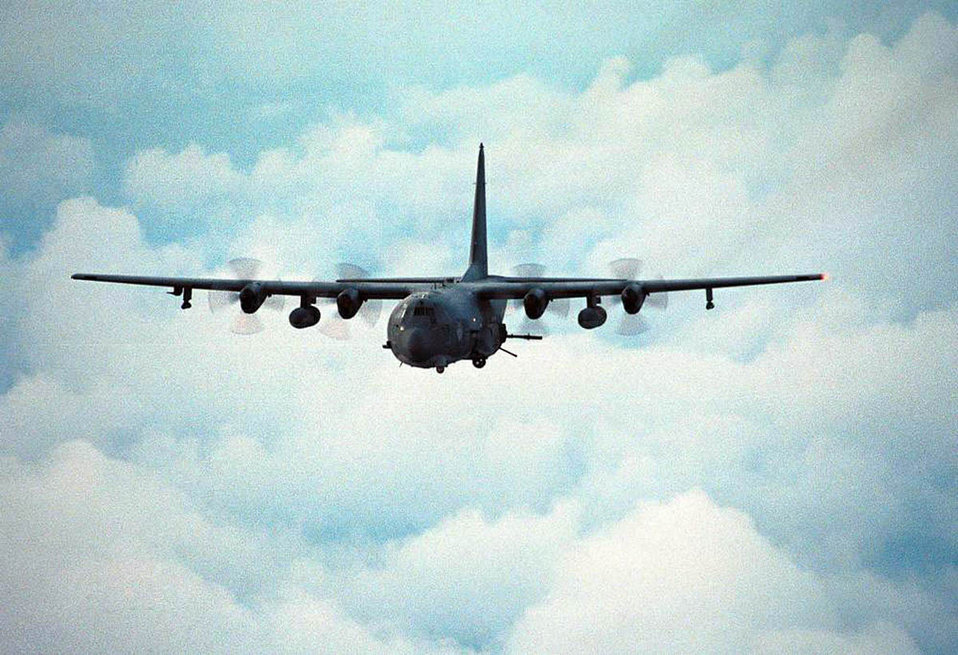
AC-130 Gunship

The AC-130 gunship's primary missions are close air support, air interdiction and force protection. Missions in close air support are troops in contact, convoy escort and urban operations. Air interdiction missions are conducted against preplanned targets or targets of opportunity. Force protection missions include air base defense and facilities defense.